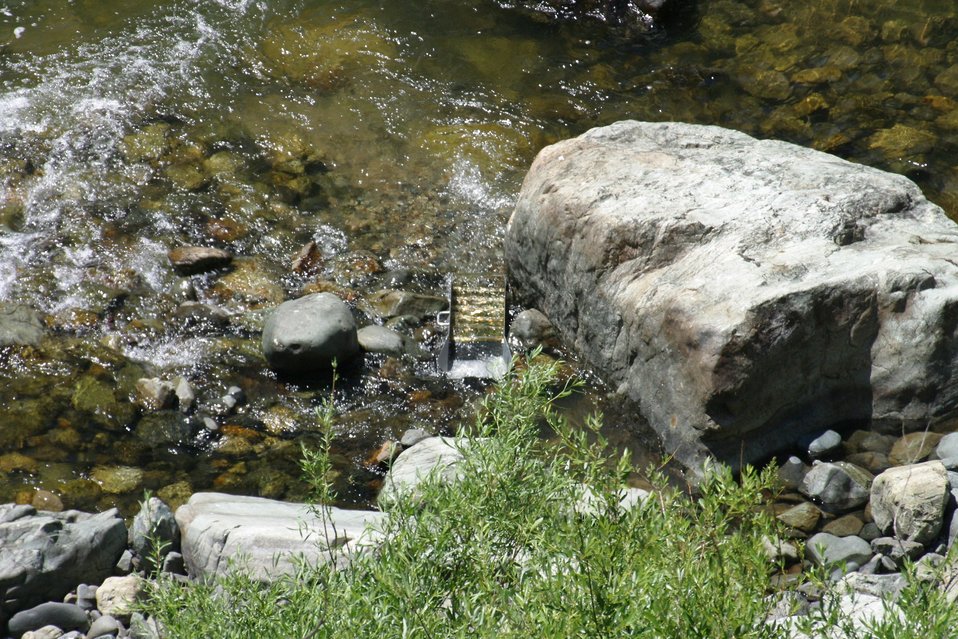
Gold sluce box below Grave Creek Falls.